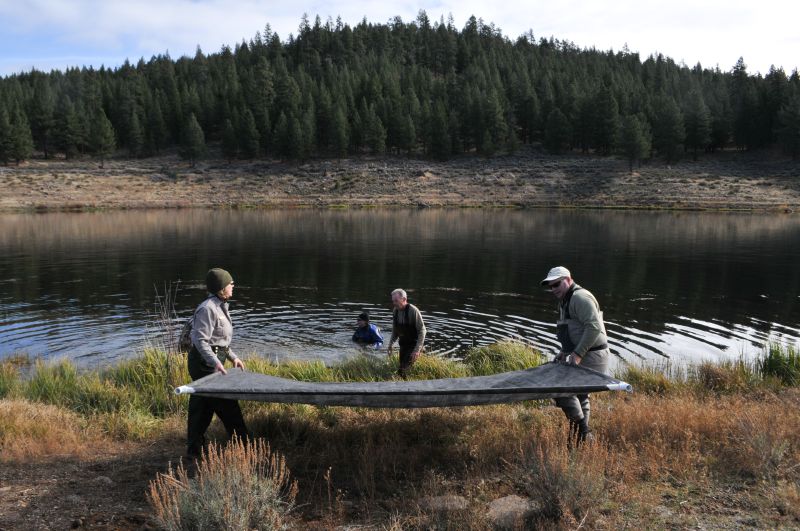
MARTIS CREEK LAKE, Calif. (Oct. 31, 2010) - Corps park ranger Jacqui Zink (left) and volunteers place sunlight barriers here Oct. 31 as part of a project to eradicate invasive Eurasian milfoil plants from the lake bottom. The gas-permeable barriers kill the milfoil plants by blocking sunlight, but don't disturb other plant and animal species native to the lake. The Corps is partnering with the Tahoe Divers Conservancy on the project, funded by a $20,000 grant from the Community Foundation of Western Nevada's Truckee River Fund.